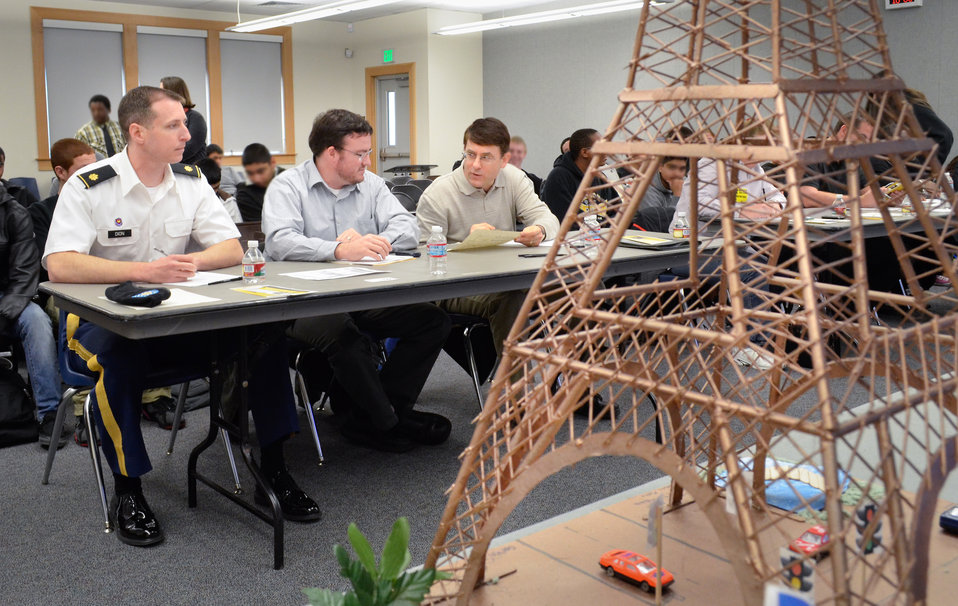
How do you make a green Eiffel Tower?

Engineers from the U.S. Army Corps of Engineers Sacramento District (from left to right) Maj. Rob Dion, Levi Bowers and John Parrish, judge a student project on building an environmentally-friendly Eiffel Tower during EDGE (or Engineering and Designing a Green Environment) Academy presentations at Antioch High School in Antioch, Calif., Feb. 8, 2013.

The engineers used their varied fields of expertise – electrical, mechanical, civil – to help judge projects and guide students on future endeavors. The school's EDGE program is part of a national foundation intended to prepare young people for college success. The week-long student presentations included written reports, scaled models and slideshow presentations of significant engineering feats they selected.